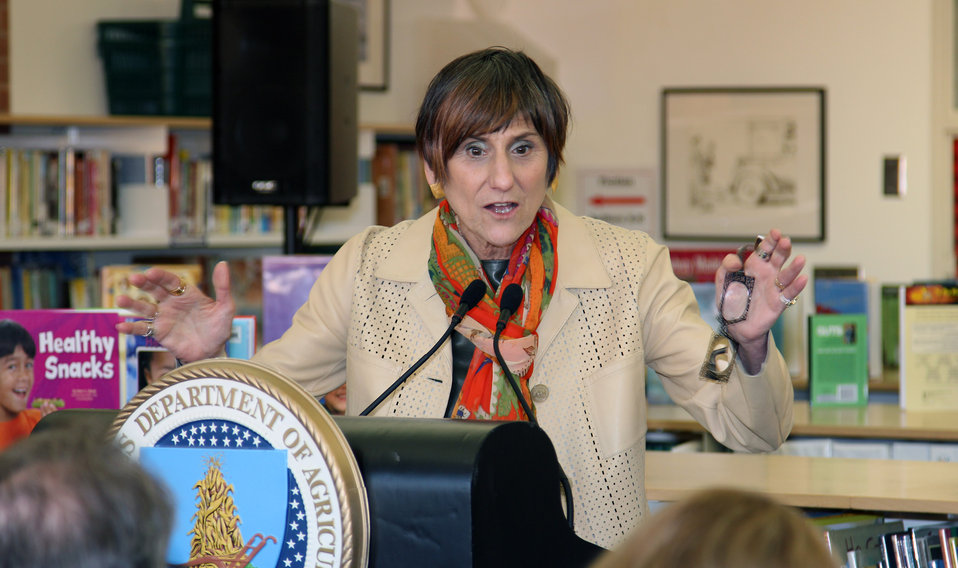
Congresswoman Rosa L. DeLauro speaks during Secretary Vilsack’s visit to to the Henry A. Wolcott Elementary School in West Hartford, Connecticut to outline the U.S. Department of Agriculture (USDA) efforts to raise a healthier generation of Americans on Friday, April 5, 2013.